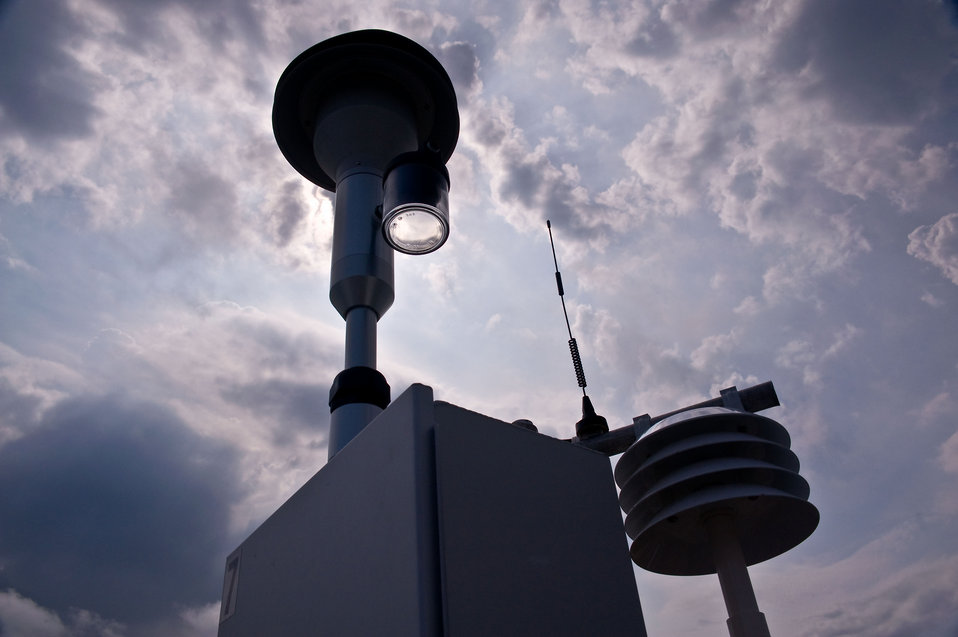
June 4, Air monitoring efforts continue

Air monitoring equipment near the beach on Grand Isle, LA.